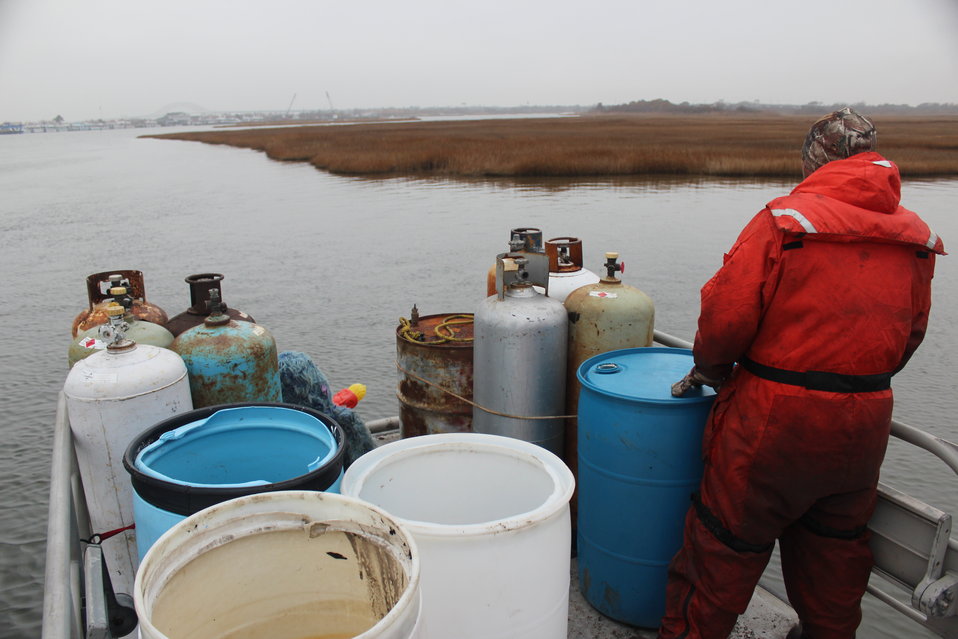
December 8, 2012 Returning to the docks with the afternoon’s catch

Crew heads back to unload the containers for sorting and proper disposal, after an afternoon searching for hazardous containers along Captree Island. These tanks and many smaller containers held below deck were found by EPA and contractor boat crews.